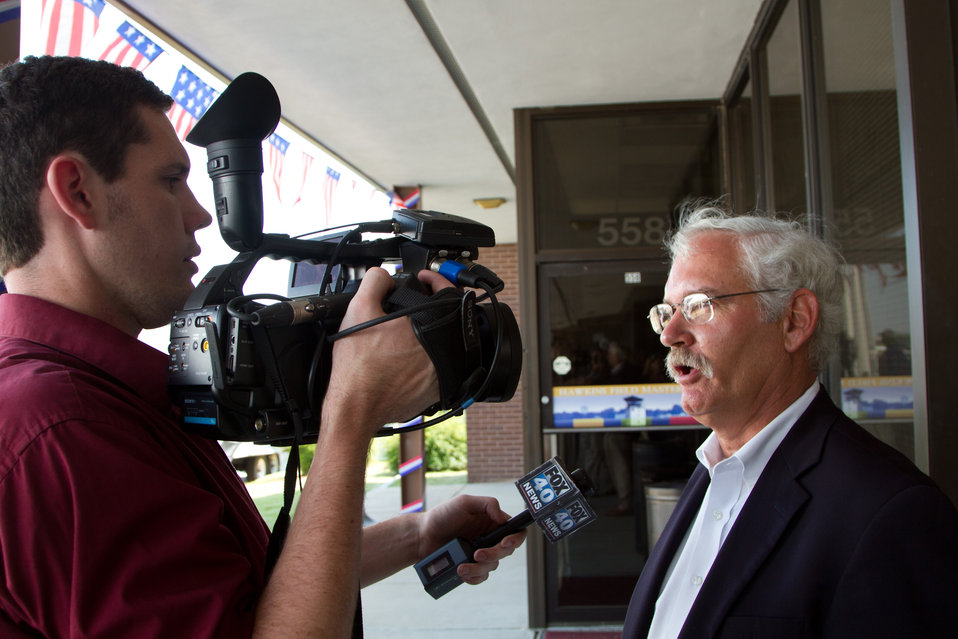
Acting Under Secretary Farm and Foreign Agriculture Service Michael Scuse (right) was interviewed by news media at Hawkins Field in Jackson, MS shortly before boarding a Blackhawk helicopter for the third aerial flyovers to assess more of the Mississippi River’s flooding in Mississippi.